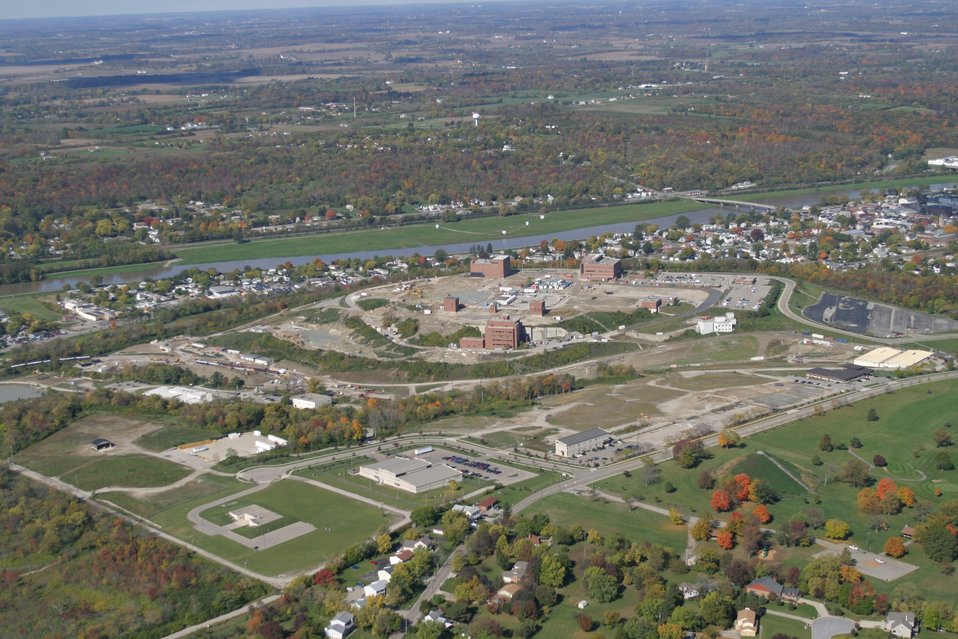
Recovery Act Project Brings End to Mound Site Cleanup Activities

The Recovery Act invested $17.9 million in the completion of EM’s legacy cleanup activities at the Mound Site in 2010.
Recovery Act workers disposed nearly 20,000 cubic meters of soil and demolition debris in the cleanup, which focused on the Operable Unit-1, a former mixed-waste landfill at the 306-acre site. The Recovery Act cleanup was the final remediation project at Mound.
The federal government is in the process of transferring ownership of the site to the Mound Development Corporation, a community reuse organization.